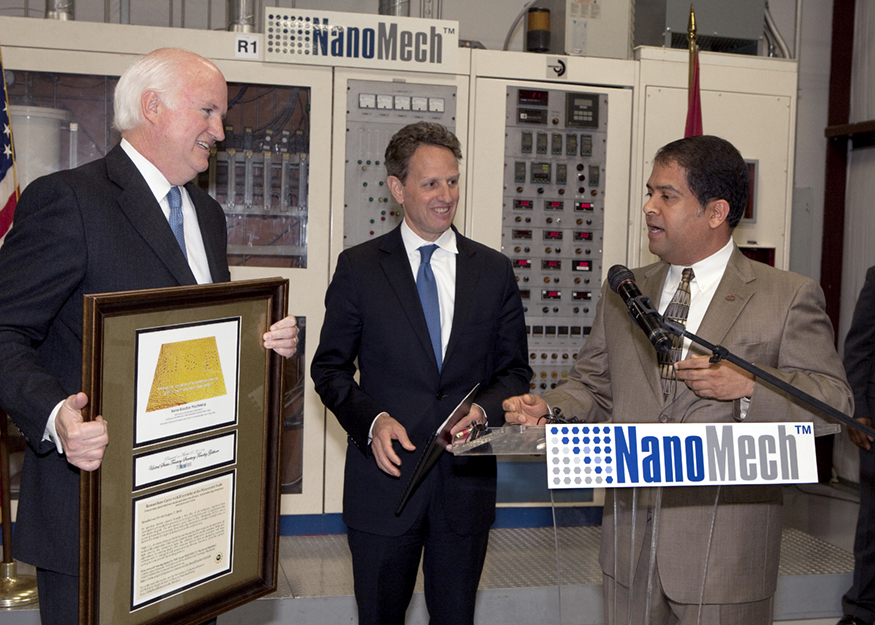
VIsit to Northwest Arkansas, 3/25/2011

On Friday, March 25, 2011, Secretary of the Treasury Tim Geithner visited Northwest Arkansas to meet with regional business leaders to discuss how government and the private sector can work together to out-innovate our competition and to tour NanoMech – a small business that demonstrates how innovative research can spur economic growth and high-wage jobs.